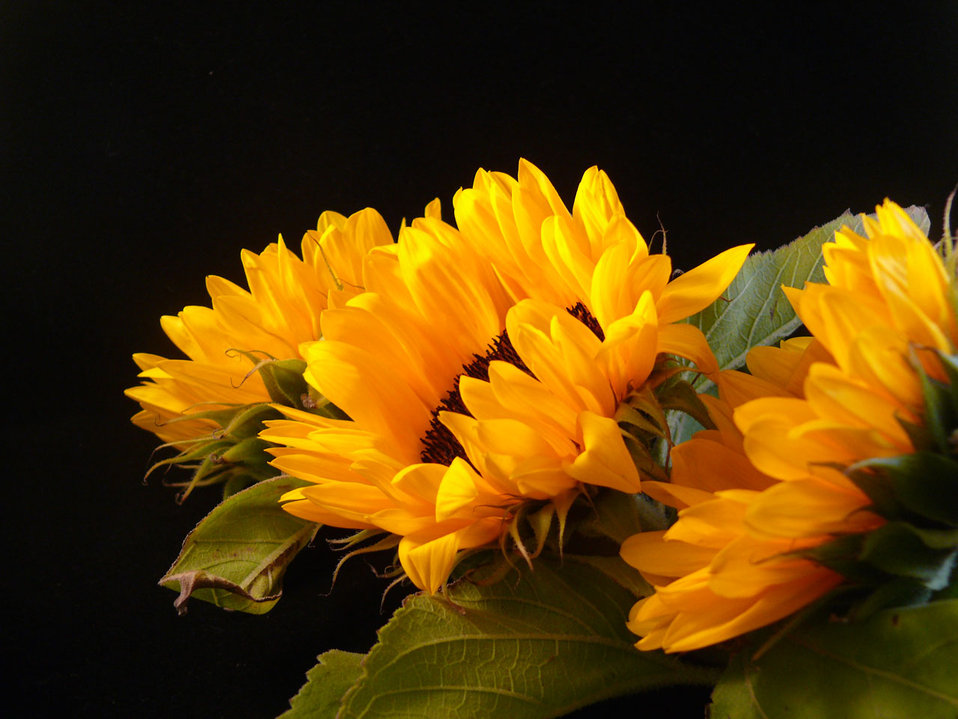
Sunflowers on black backround.